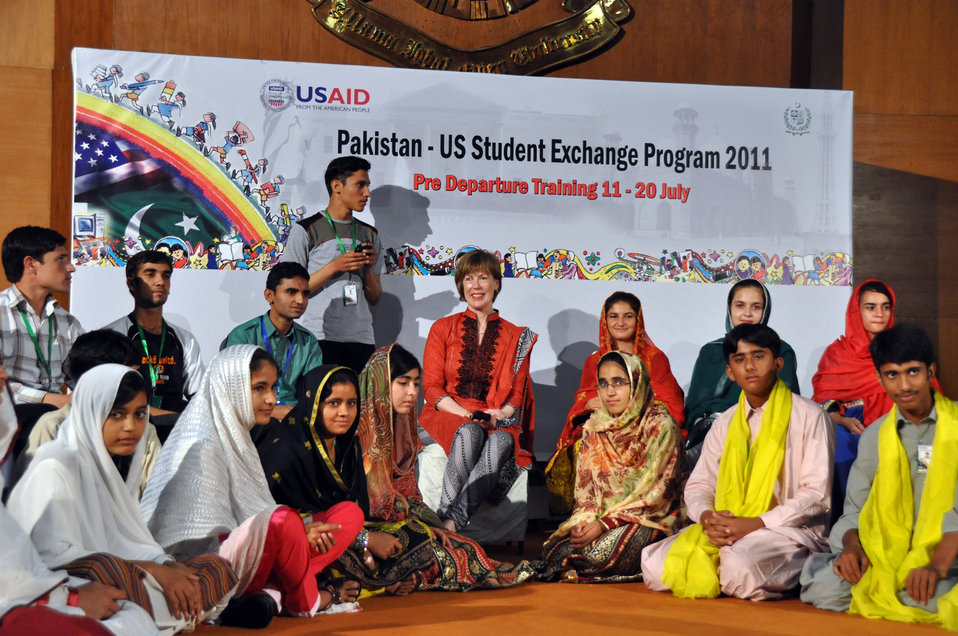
Pakistan-U.S. Student Exchange Program 2011

July 20, 2011: Dr. Marilyn Wyatt, Wife of U.S. Ambassador Cameron Munter discussed with a group of 43 students from all over the country the similarities and differences between the Pakistani and American cultures.
“Our two countries are literally half way across the world from each other,” said Dr. Wyatt during the discussion. “We have very different cultures, languages, and even food. However, we also are very similar: we love our countries, our families, and we are all working to make this world a better place.”
The 43 boys and girls from USAID-supported schools in Balochistan, FATA, and Sindh were participating in a ten-day training workshop organized by the USAID ED-LINKS program at the Allama Iqbal Open University Campus in Islamabad. During this program, 15 to 21 year old students explored cultural commonalities between Pakistan and American culture and values, such as folk music, clothing, food, and history. The program included visits to museums and other cultural sites around Islamabad, as well as a variety of research projects. Students prepared skits based on their learning.